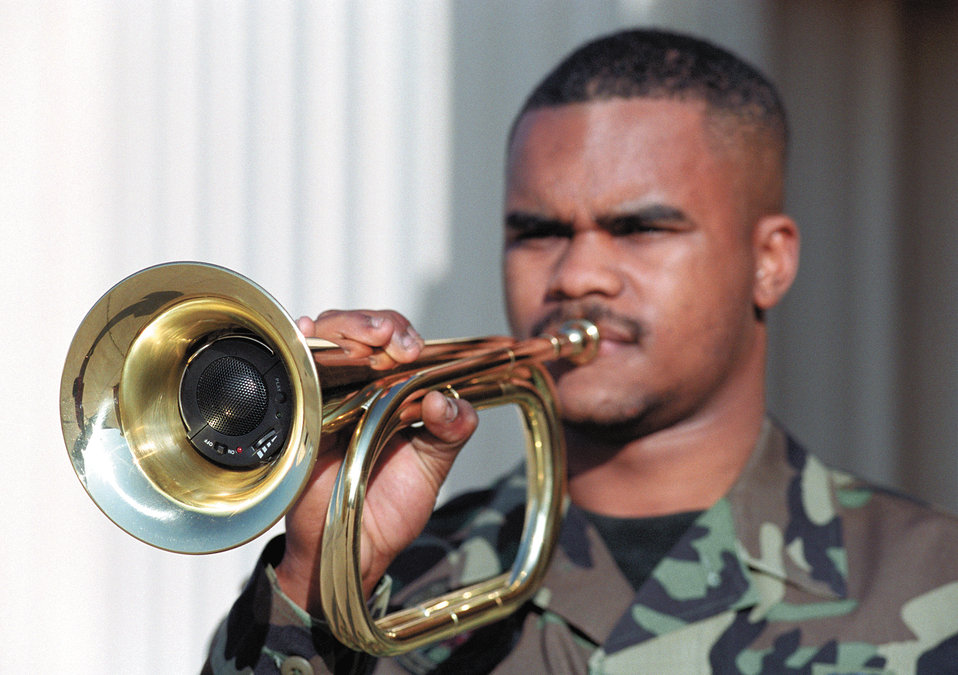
Bugle boy

TINKER AIR FORCE BASE, Okla. -- A recorder that plays